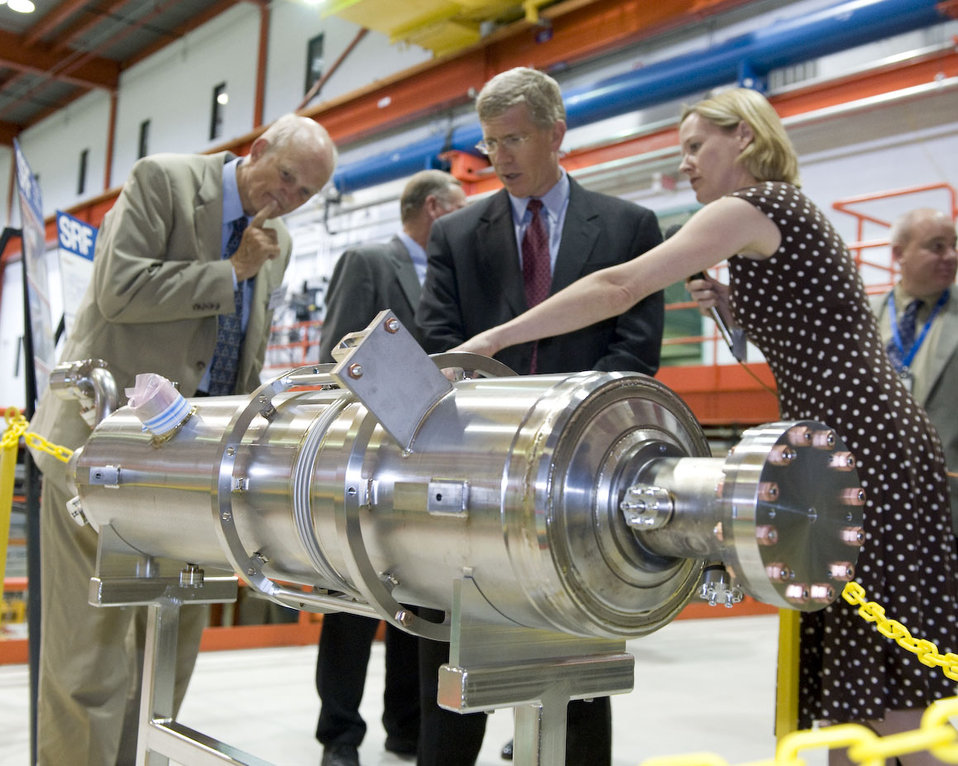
Fermilab scientist Camille Ginsburg explains the benefits of superconducting particle acceleration devices to DOE Office of Science Director Bill Brinkman (left) and Deputy Secretary Poneman.